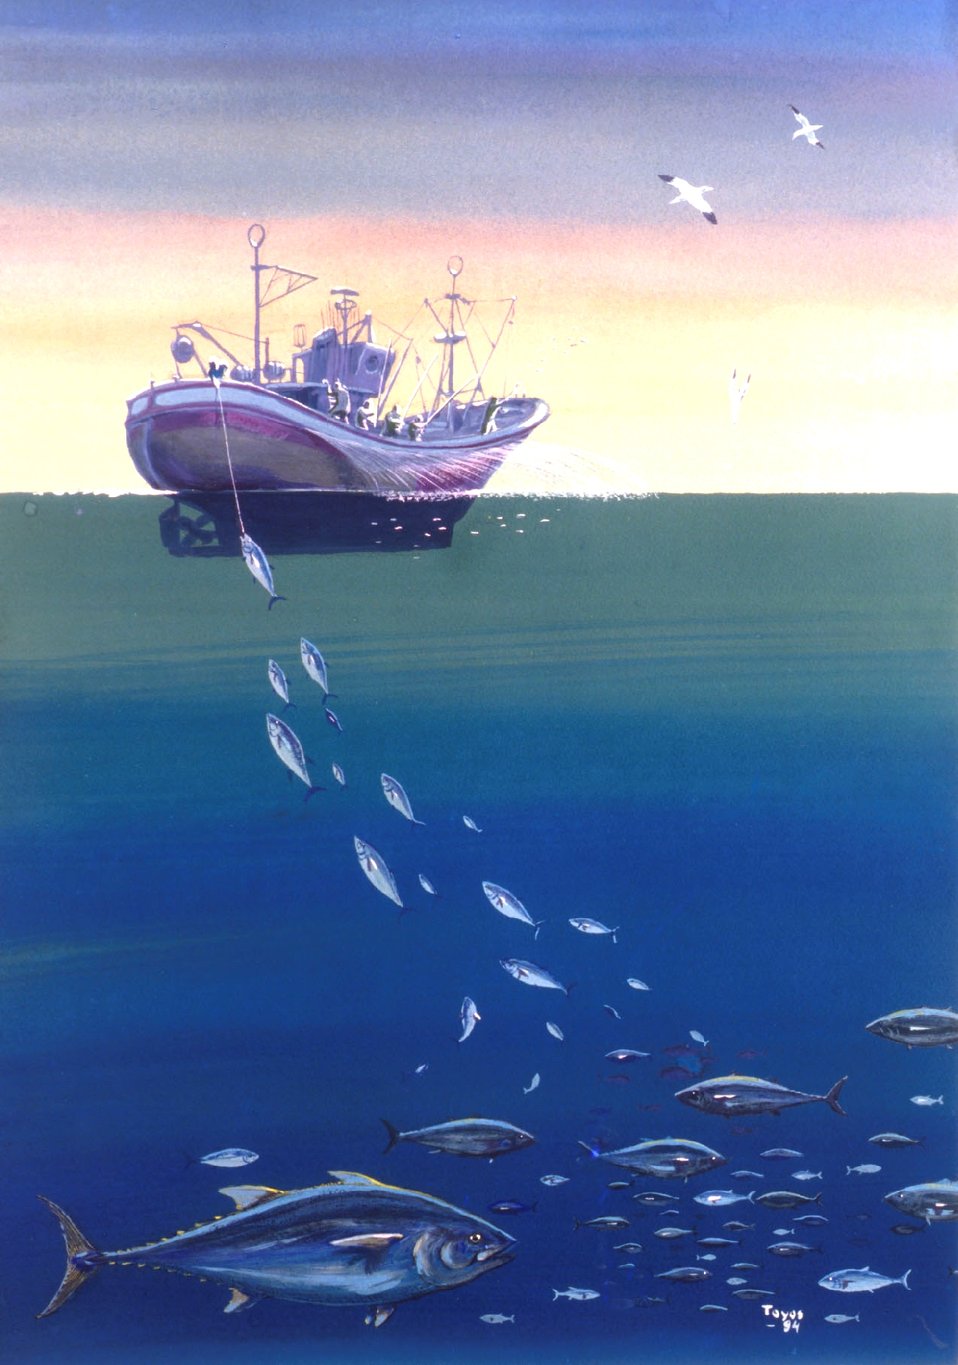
Artist's conception of pole and line fishing. When one fish is hooked, the rest of the school tends to follow the hooked fish to the side of the fishing vessel .